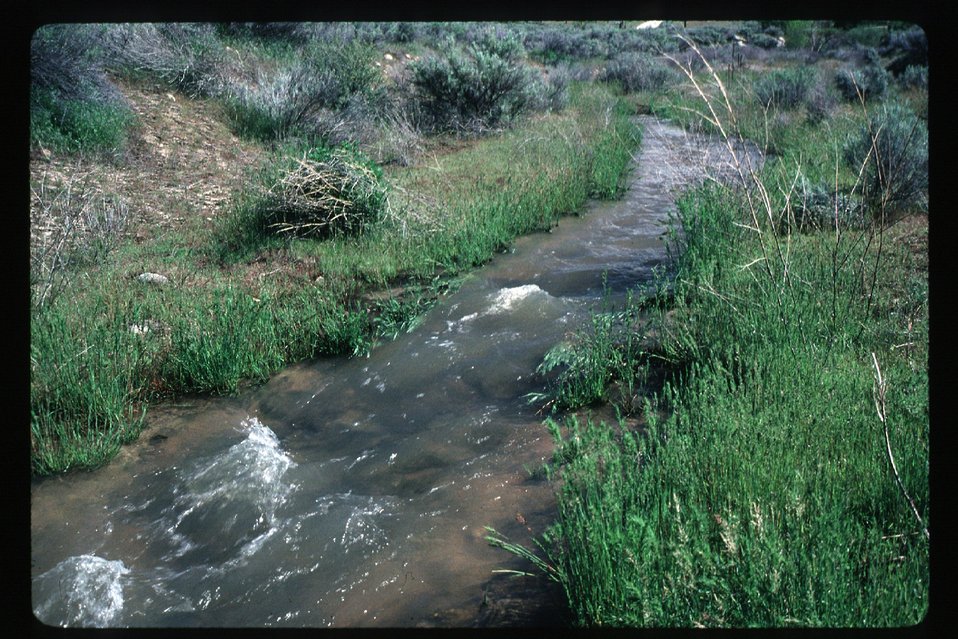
Riparian area Boise Foothills LSRD Lower Snake River District